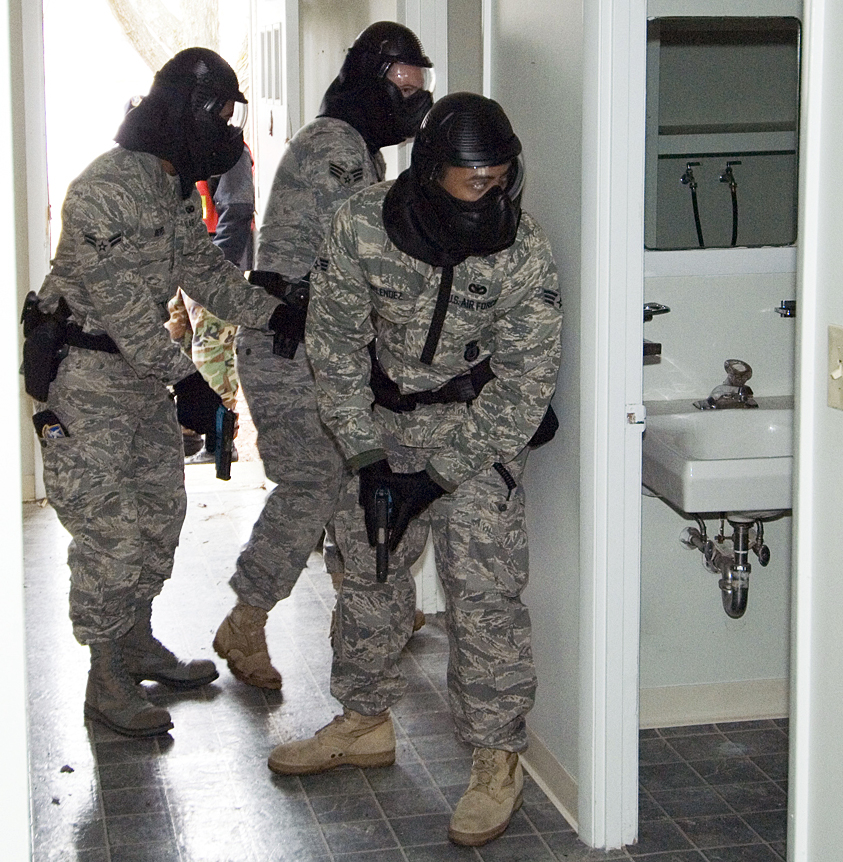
Joint training exercise strengthens AF, civilian partnerships

Patrolmen from the 66th Security Forces Squadron practice their search techniques while looking for an armed suspect during a joint police training exercise March 16 at Hanscom Air Force Base, Mass. The training provided an opportunity for SFS patrolmen and members of the Lexington, Mass., Police Department to train side by side, enhancing familiarization with each others' procedures and tactics.